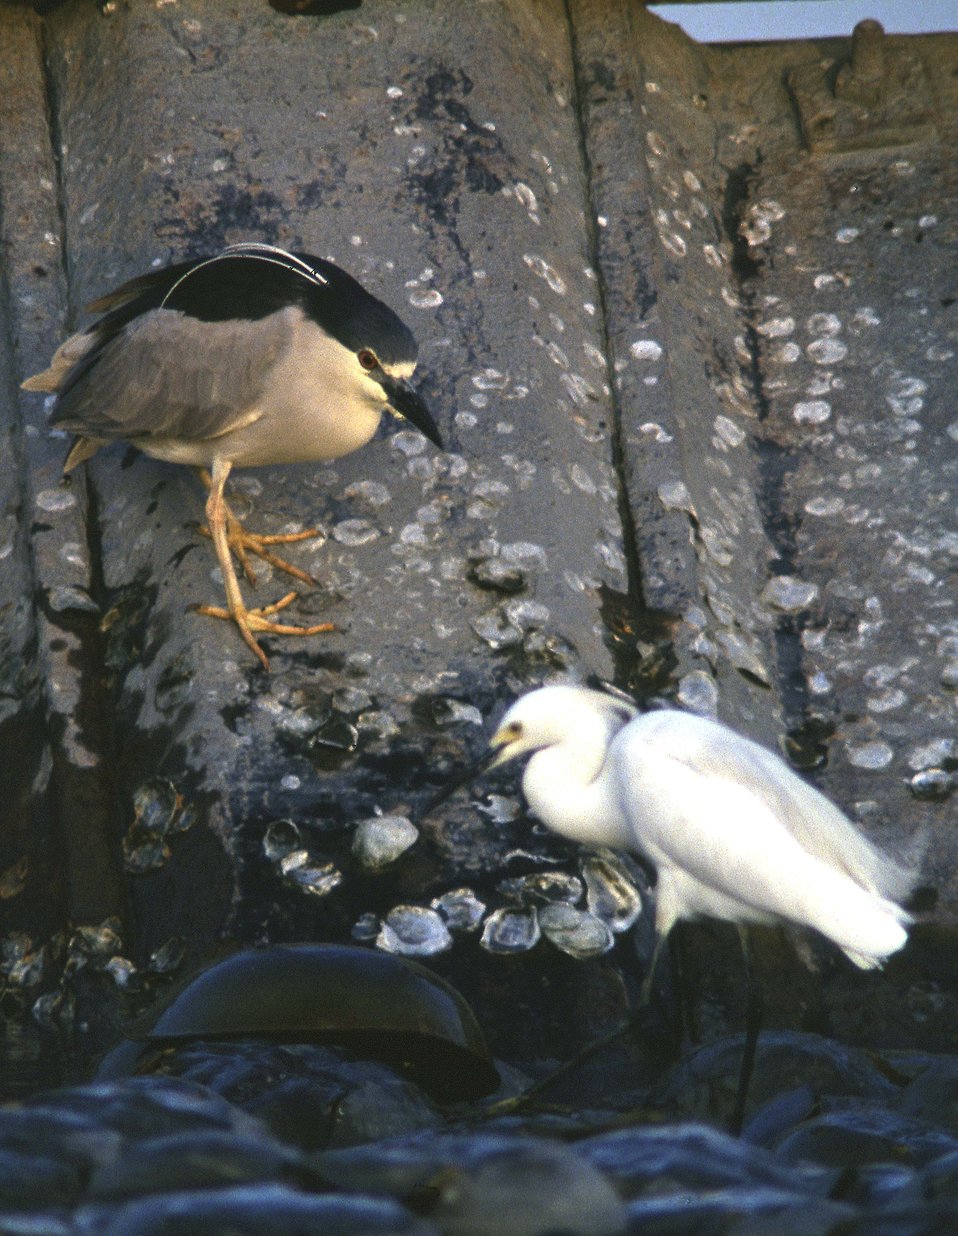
Black Crowned Night Heron and Snowy Egret

Pt. Mahon, DE.